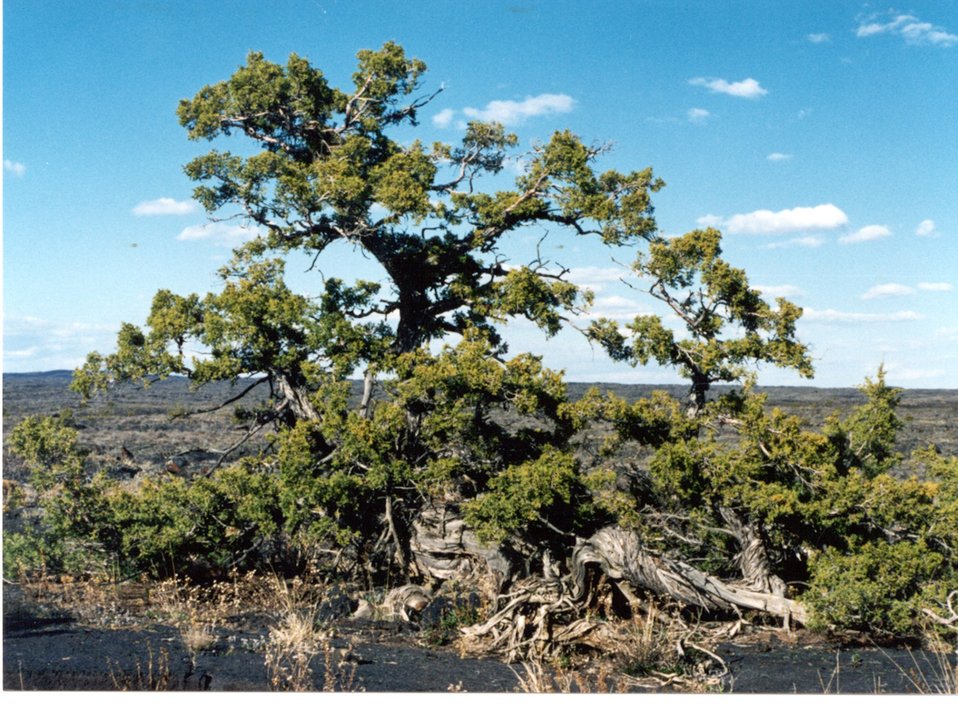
Juniper in Wapi Flow Rift Hike Craters of the Moon Shoshone Field Office USRD Upper Snake River District